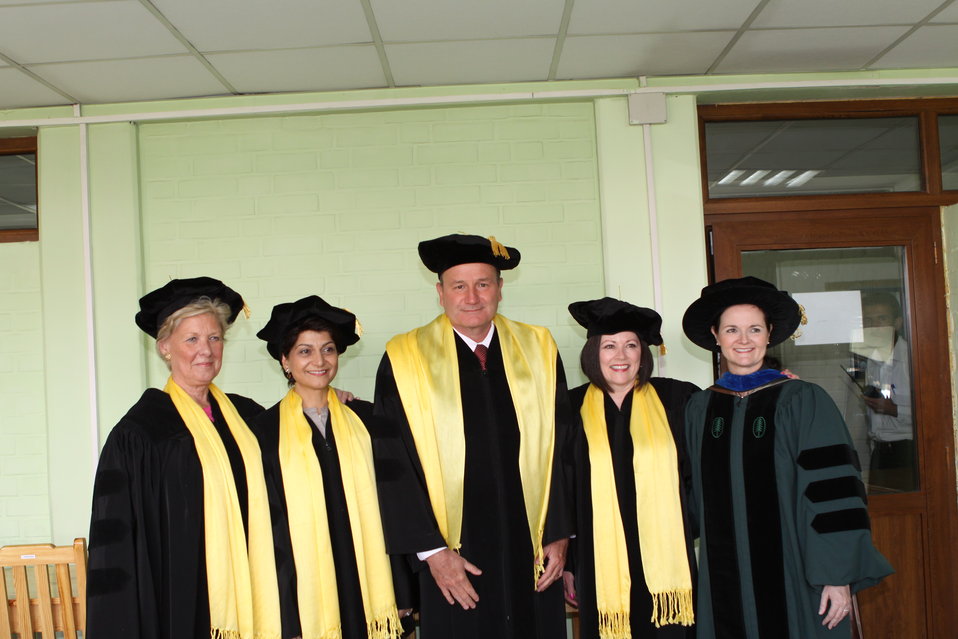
100526 AUAF Graduation 058